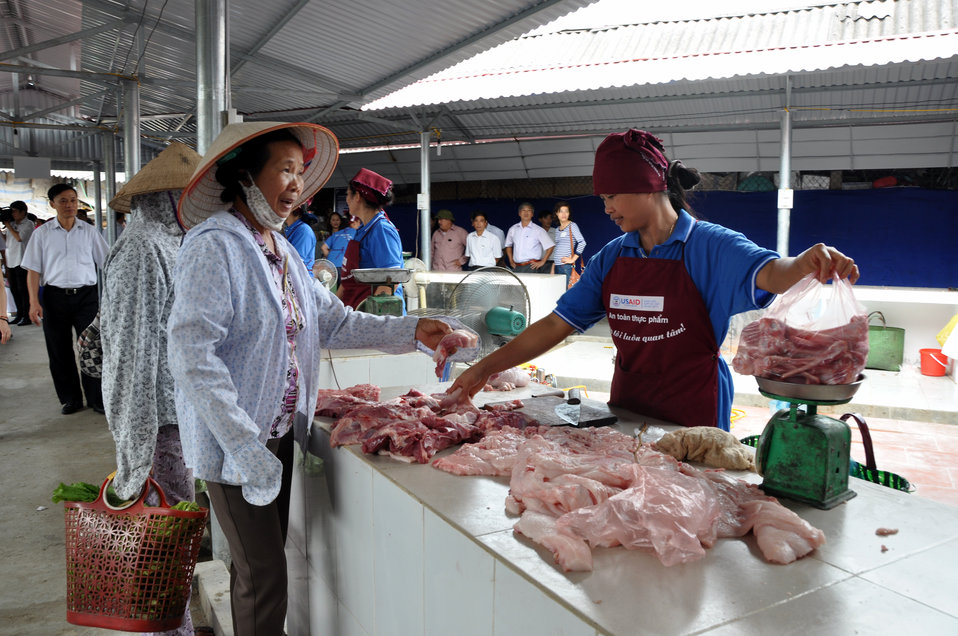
Handover Ceremony Hoa Mac Market Ha Nam

October 26, 2012